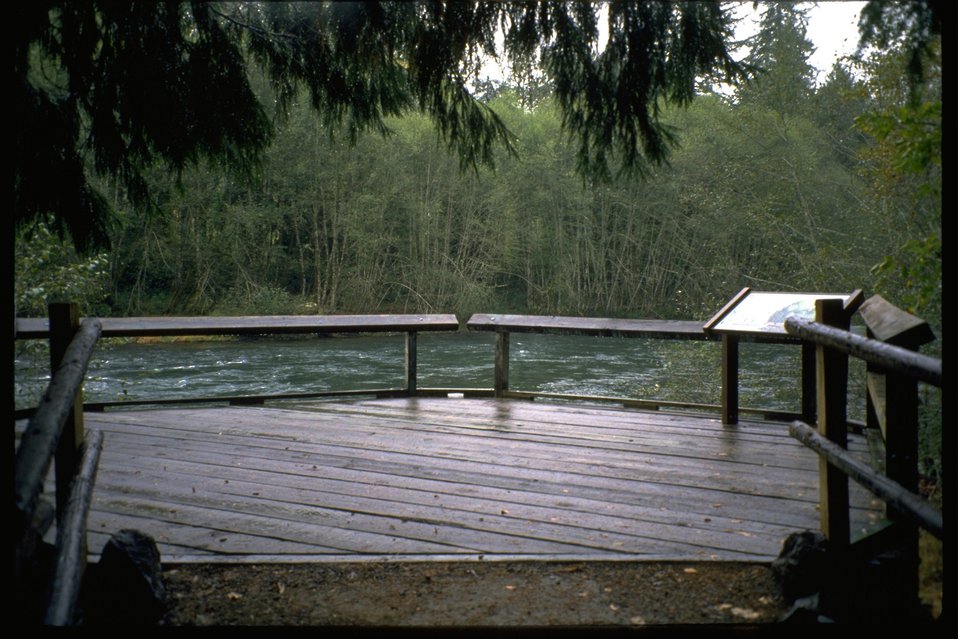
Viewing platform along the McKensie River.